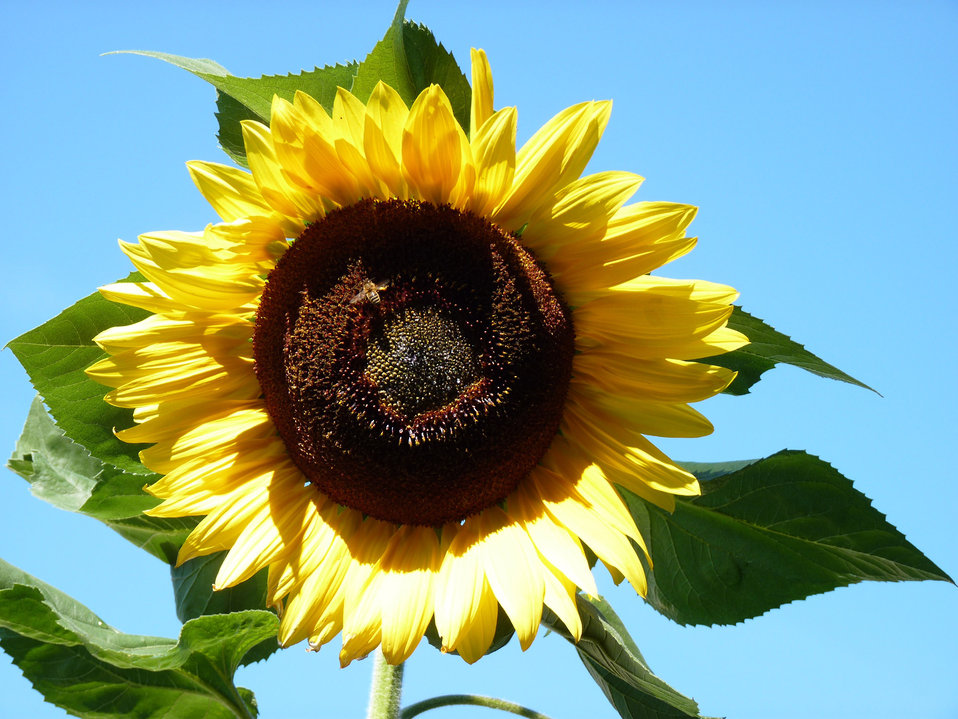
Sunflower in the sky

Flower of sunflower.